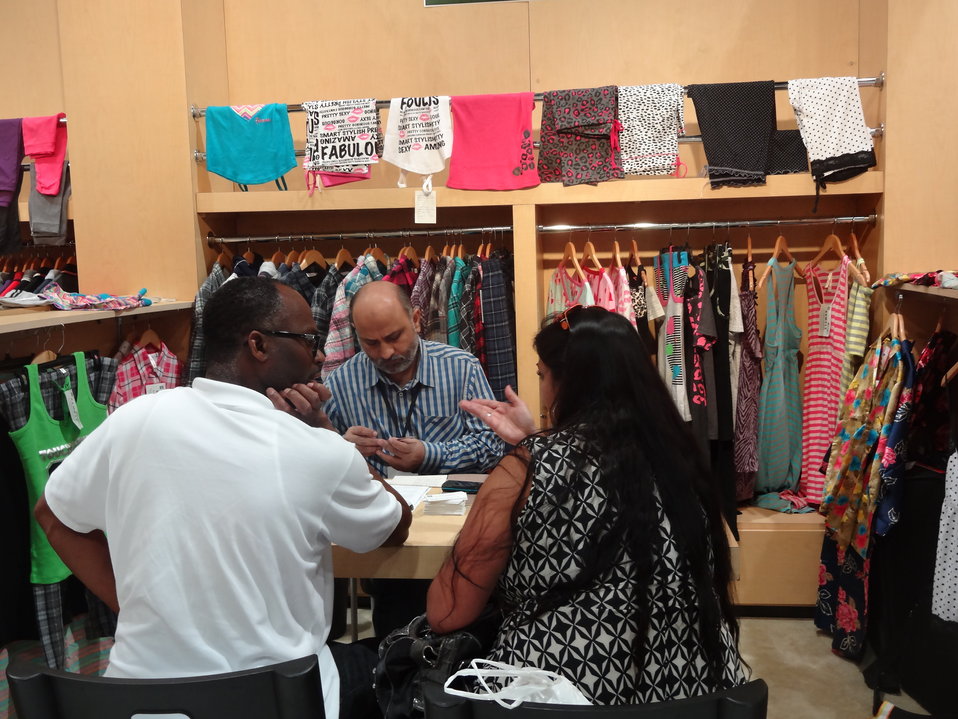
USAID's Firms Project

Project beneficiaries from Pakistan participating at the 2013 Magic Market Week in Las Vegas